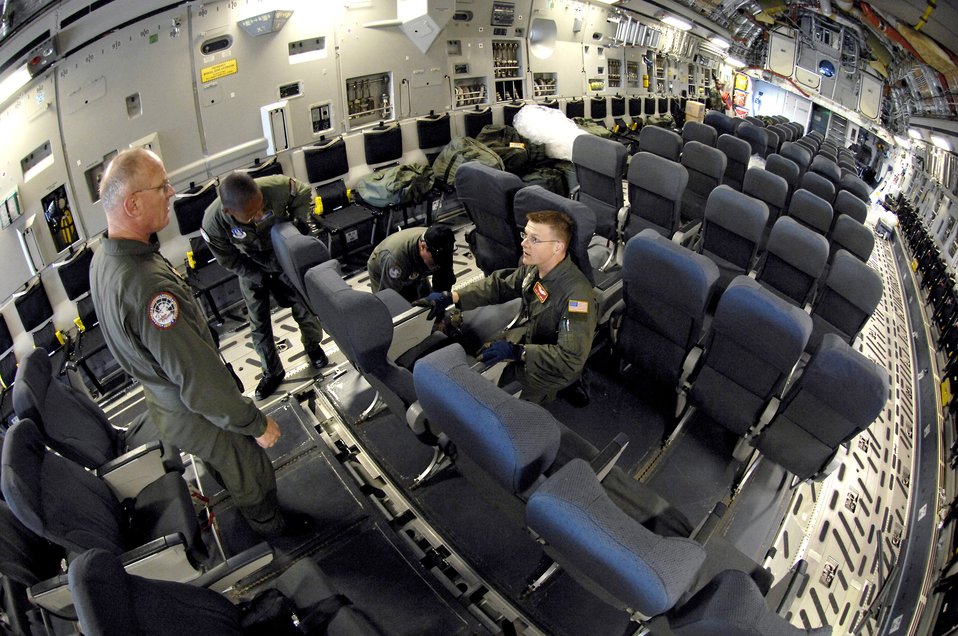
Getting ready to fly to McMurdo

Loadmasters install passenger seats on their C-17 Globemaster III for the upcoming winter fly-in missions to Antarctica at Christchurch New Zealand Aug. 19, 2007. This C-17 and 31 Airmen from McChord Air Force Base, Wash., will begin the annual winter fly-in augmentation of scientists, support personnel, food and equipment for the U.S. Antarctic Program at McMurdo Station Aug. 20. WinFly is the opening of the first flights to McMurdo station, which closed for the austral winter in February.